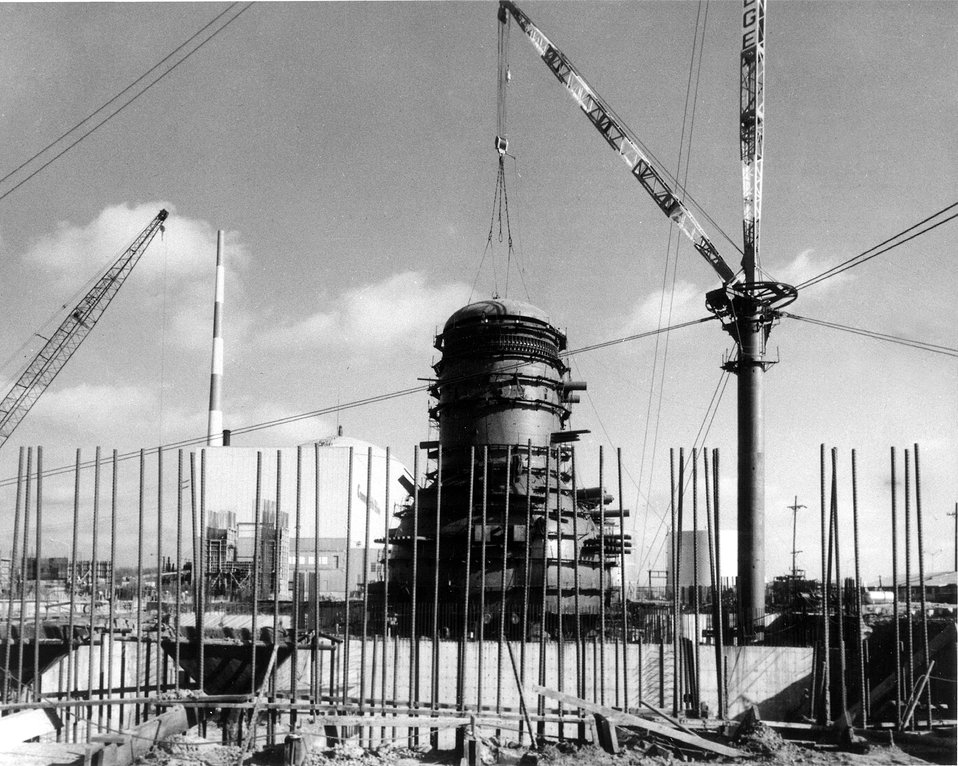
Workmen at the Commonwealth Edison Company's Dresden Nuclear Power Station near Morris, Illinois, in mid-November, 1966, topped out the steel drywell that will enclose the Dresden 2 reactor. Circa 1967.